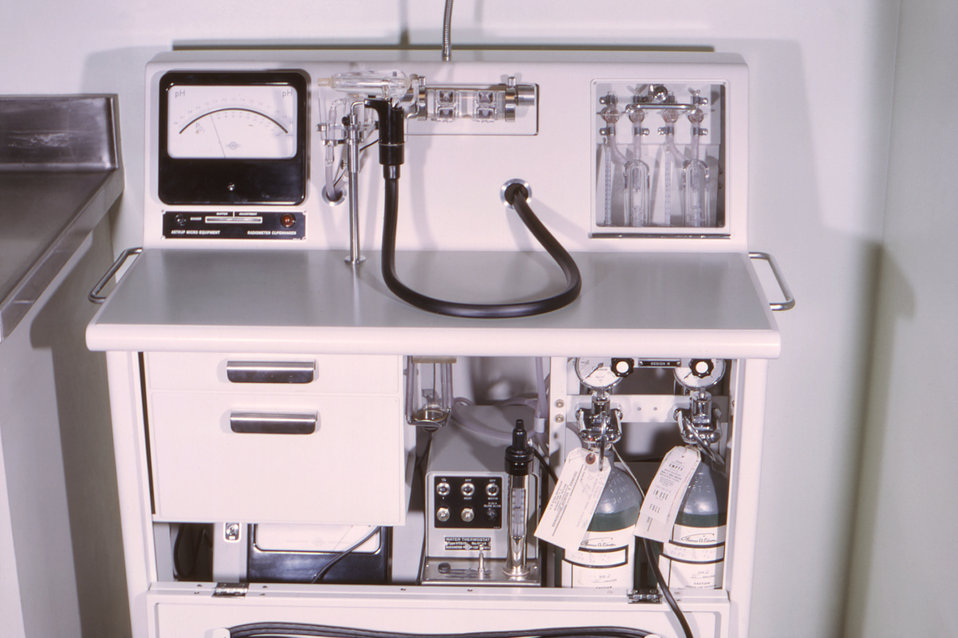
This historic image from 1964 depicts a blood pH apparatus that was used in the Centers for Disease Control's laboratories. Blood pH is the measure of the balance between its acidity and alkalinity, which in numeric terms, narrowly falls between the values of 7.35 to 7.45, which means that it is slightly more basic than acidic.